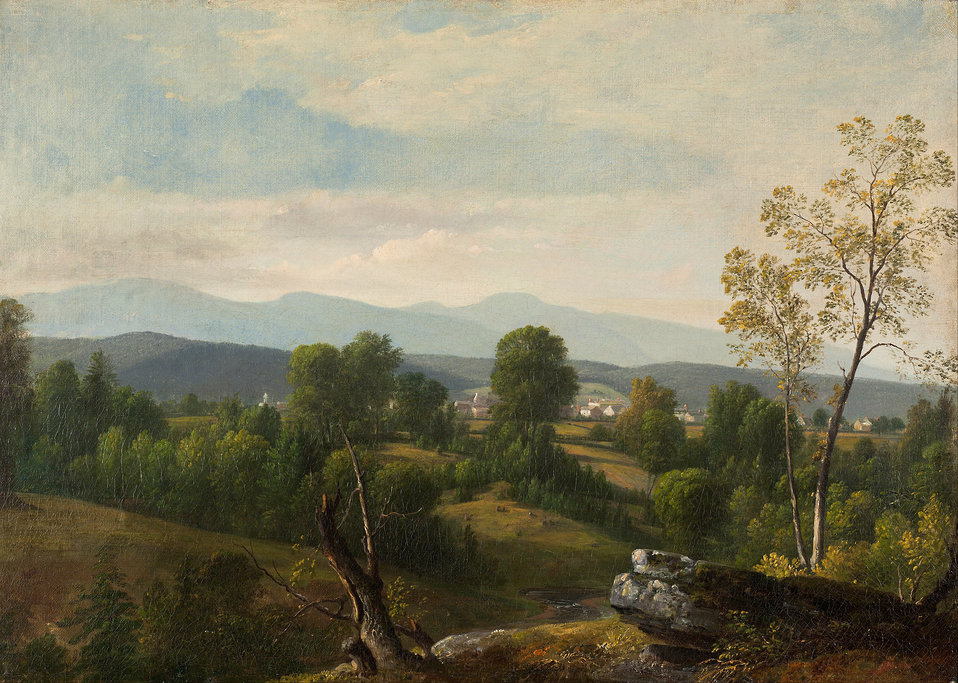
Asher Brown Durand - A View of the Valley - Google Art Project